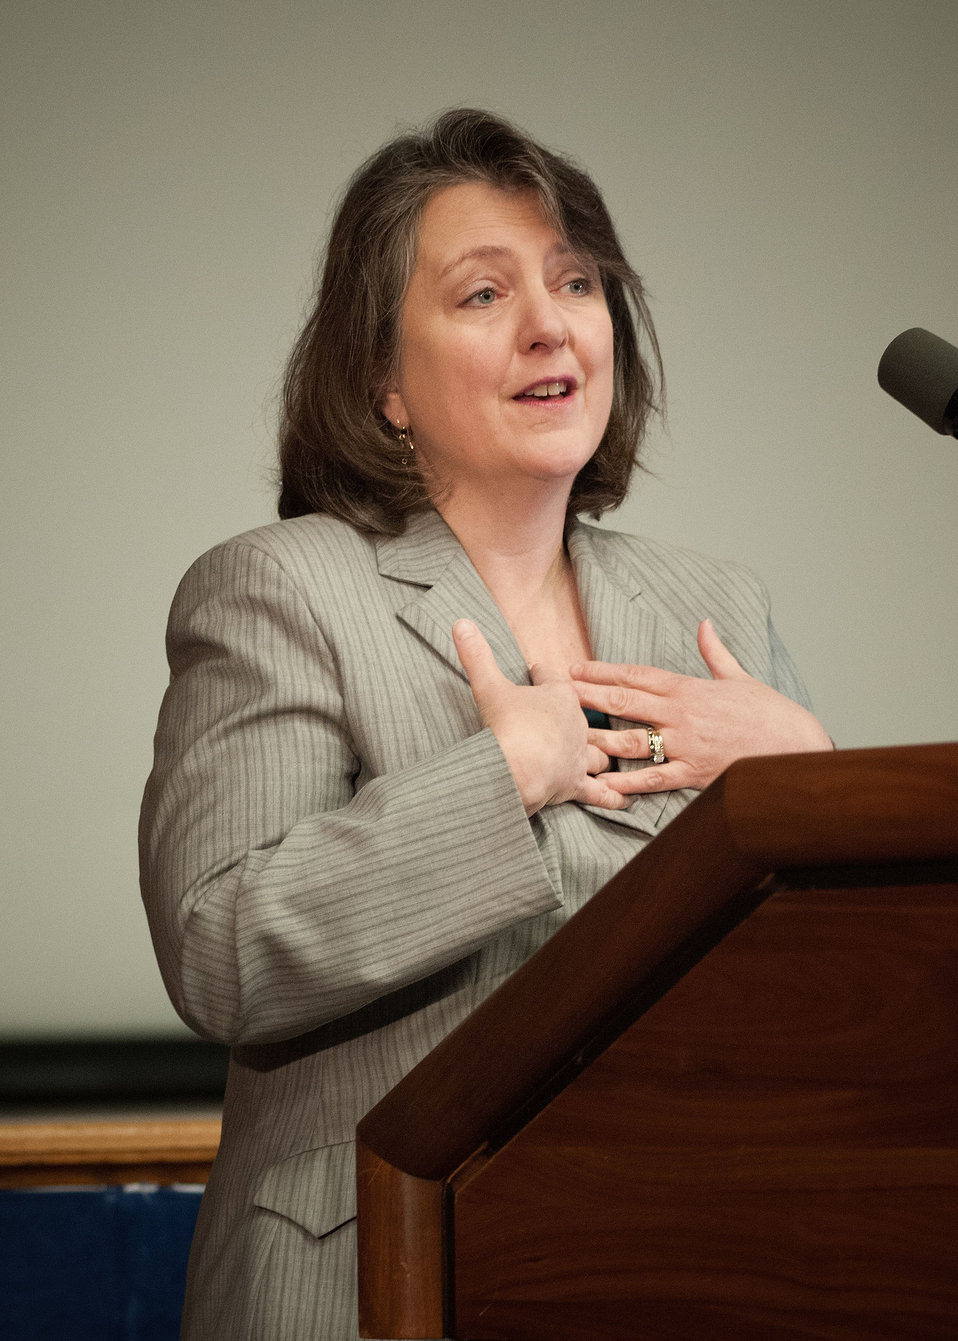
Agriculture Deputy Secretary Dr. Kathleen Merrigan introducs Agriculture Secretarty Tom Vilsack at the U.S. Department of Agriculture’s (USDA) Fourth Annual Cultural Transformation event held in Washington, D.C. on Tuesday, Dec. 4, 2012. The theme for the event “Faces of Cultural Transformation” Focusing on changing the way we serve our customers and cultural transformation’s benefits to employees.